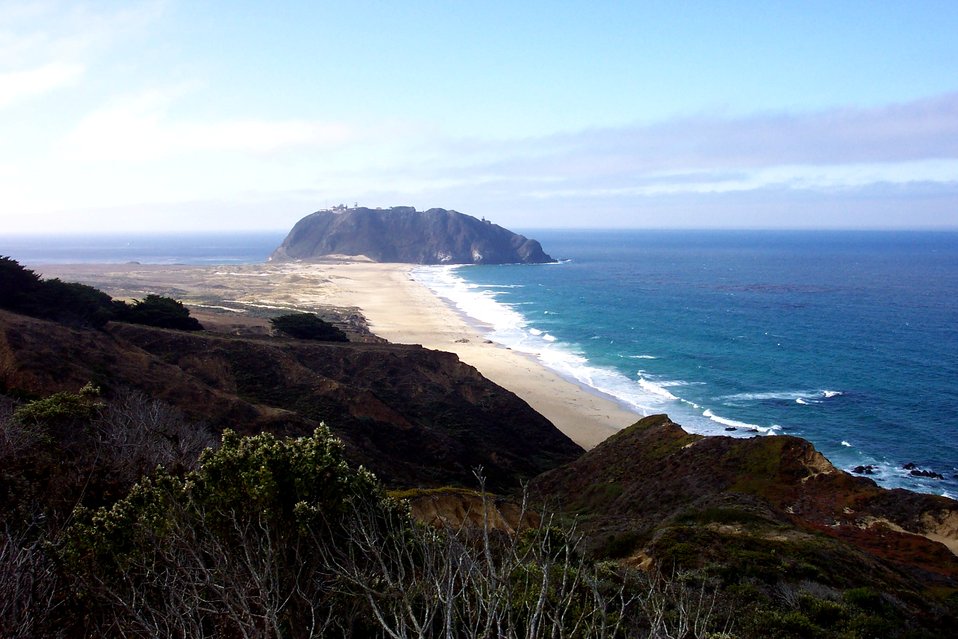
Looking down a pristine beach toward Point Sur.